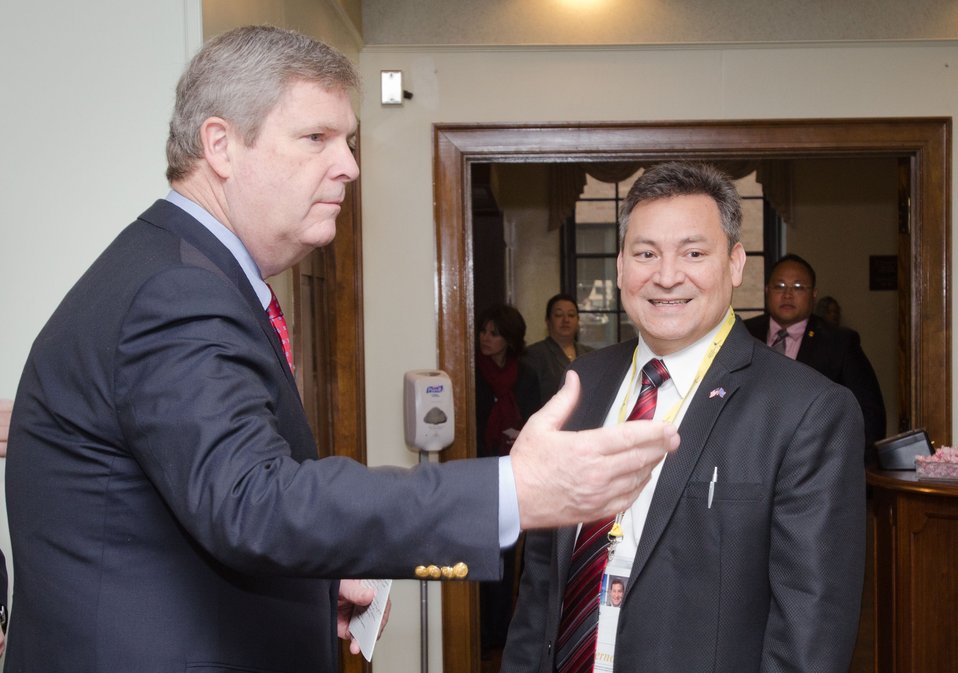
Agriculture Secretary Tom Vilsack welcomed Guam - Governor Eddie Calvo to a breakfast he hosted for Western Governors and Federal Officials, to a breakfast for Western Governors and Federal Officials, in the Lincoln Room at the United States Department of Agriculture headquarters, in Washington, D.C., on Sunday, February 26, 2012.